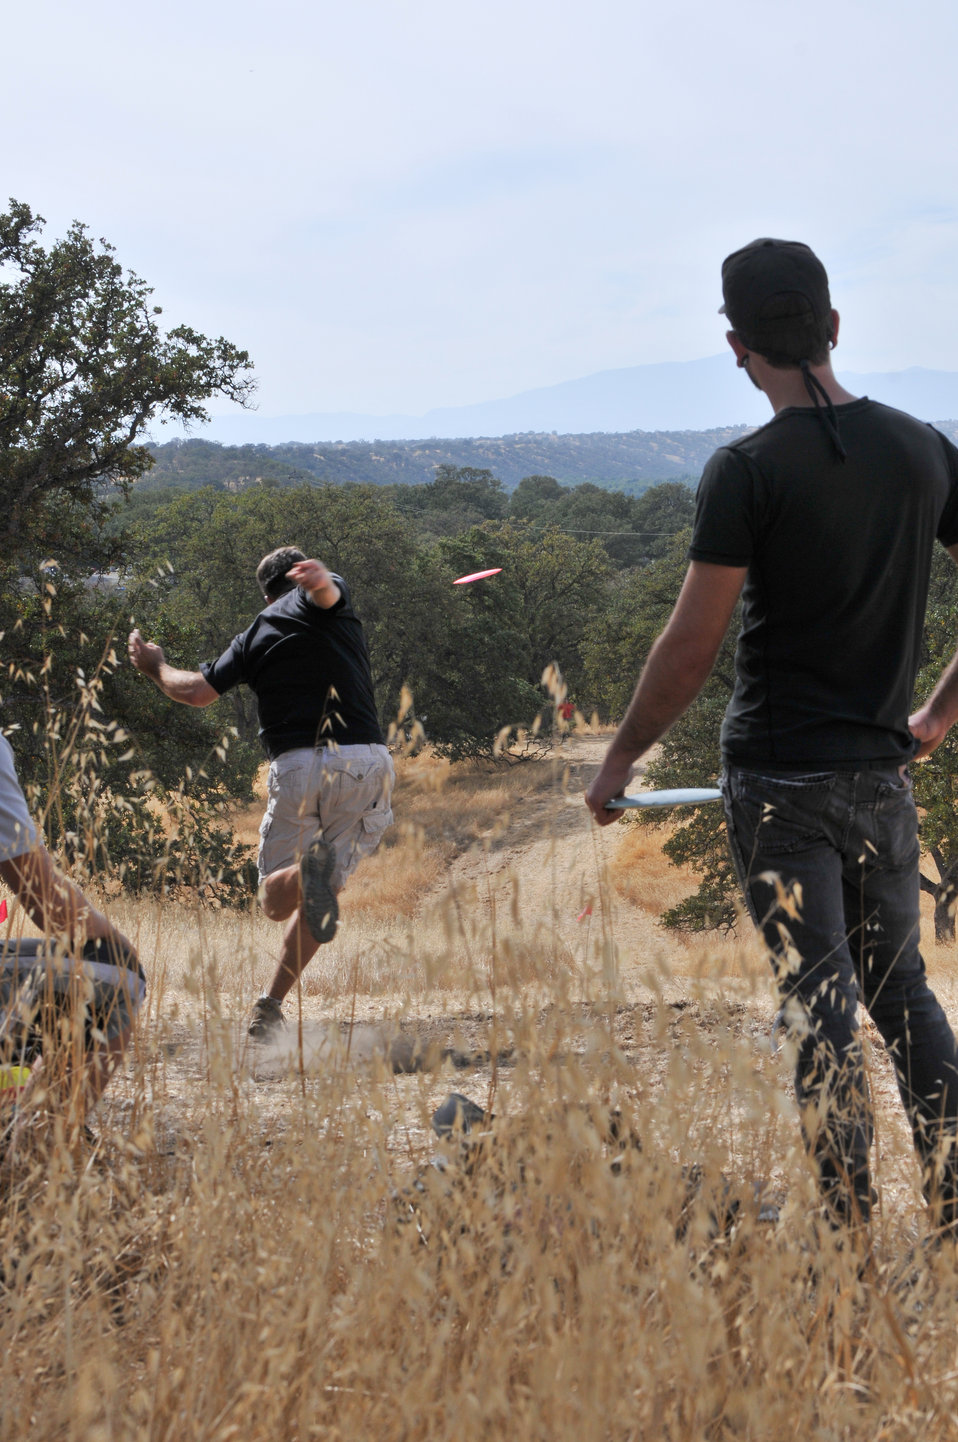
BLACK BUTTE LAKE, Calif. (Oct. 18, 2010) -- A disc golfer tees off during the Professional Disc Golf Association's Norcal Series Championships here Oct. 16. The U.S. Army Corps of Engineers Sacramento District’s Black Butte hosted the tournament Oct. 15-17 at its new disc golf course, built on park lands by The Orland Aces disc golf club under a partnership with the Corps. More than 150 disc golfers from as far as Texas competed in the tournament.